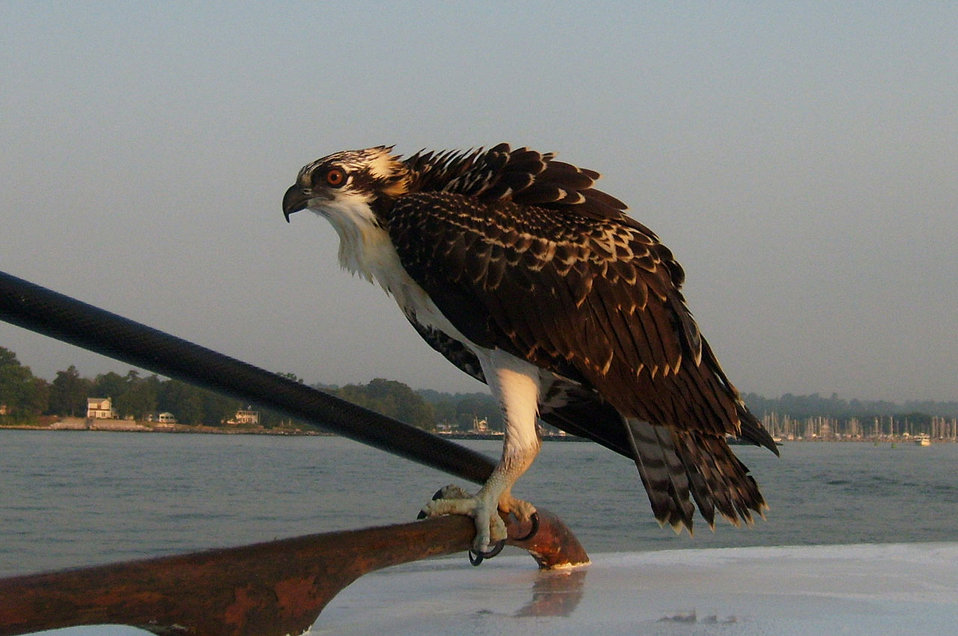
Osprey hawk

Bird sitting.